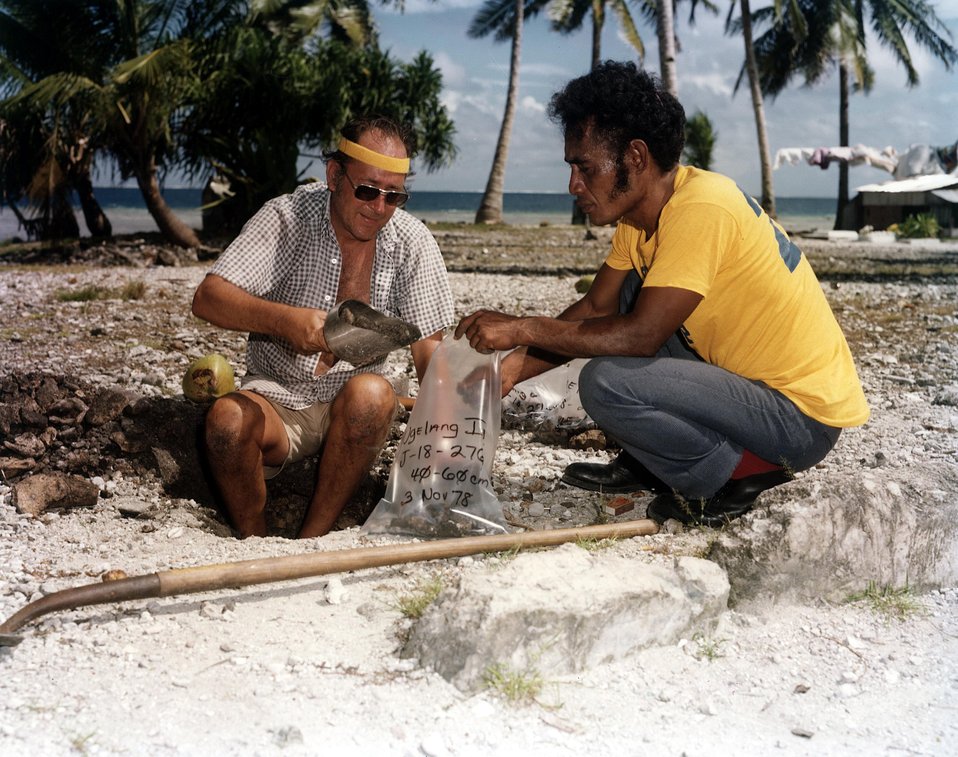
Millstone Nuclear Power Station Unit 1.